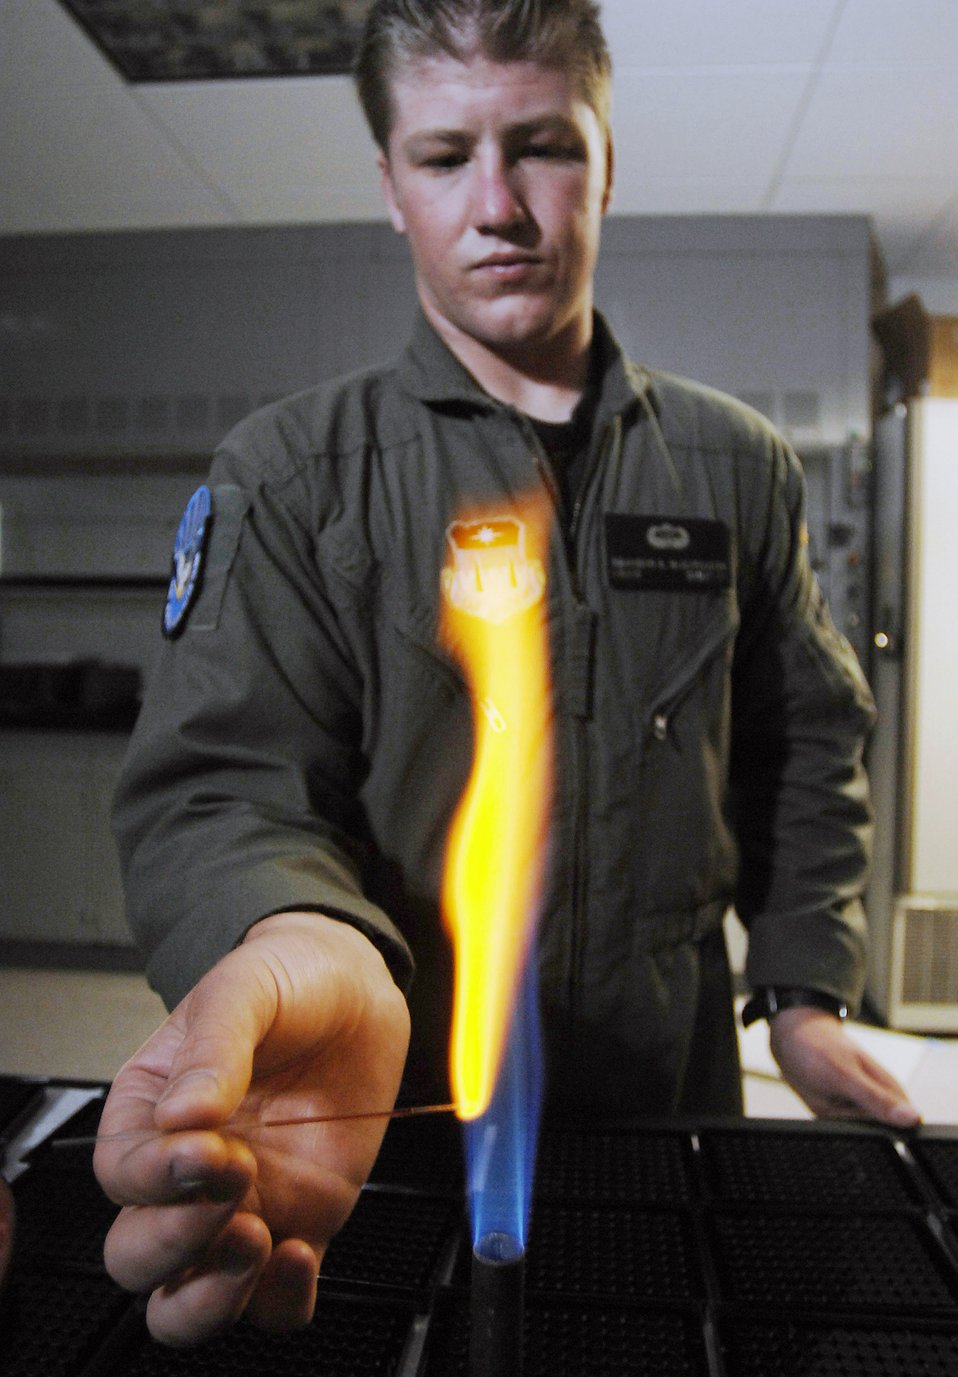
Cancer research

Cadet Second Class Brandon McCutcheon prepares a sample for an experiment using a dye to identify free radicals in hopes of one day treating chemical warfare decontamination and cancer patients at the Air Force Academy, Colorado Springs, Colo., on July 10. The United States Air Force Academy offers a four-year program of instruction and experience designed to provide cadets the knowledge and character essential for leadership, and the motivation to serve as Air Force career officers. Cadet McCutcheon is majoring in Bio Chemisty and is also with the parachute demonstration team Wings of Blue.